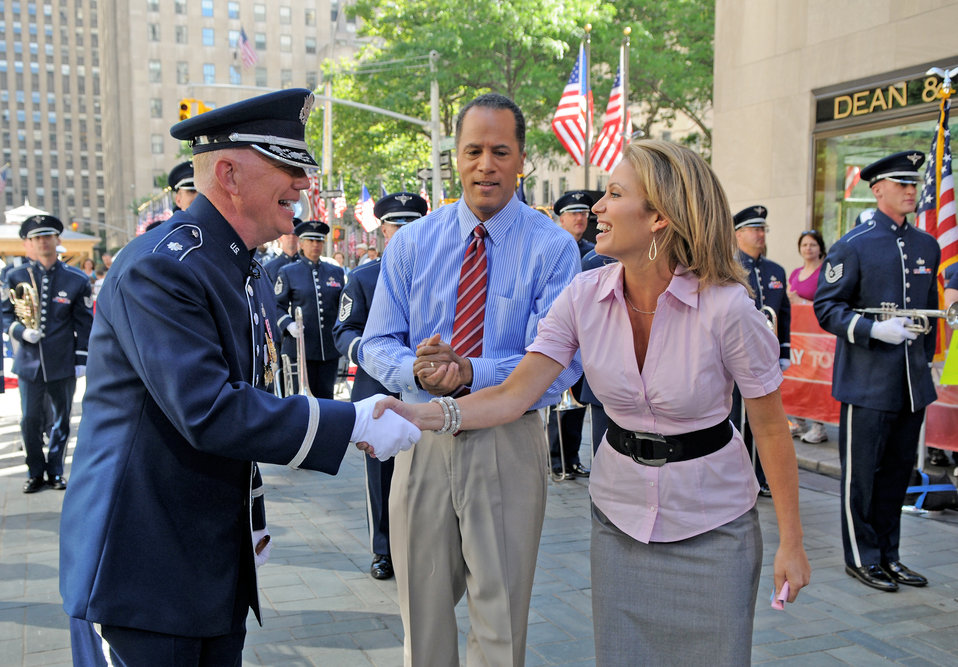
Band performs on 'Today' show

Lt. Col. Alan Sierichs meets with